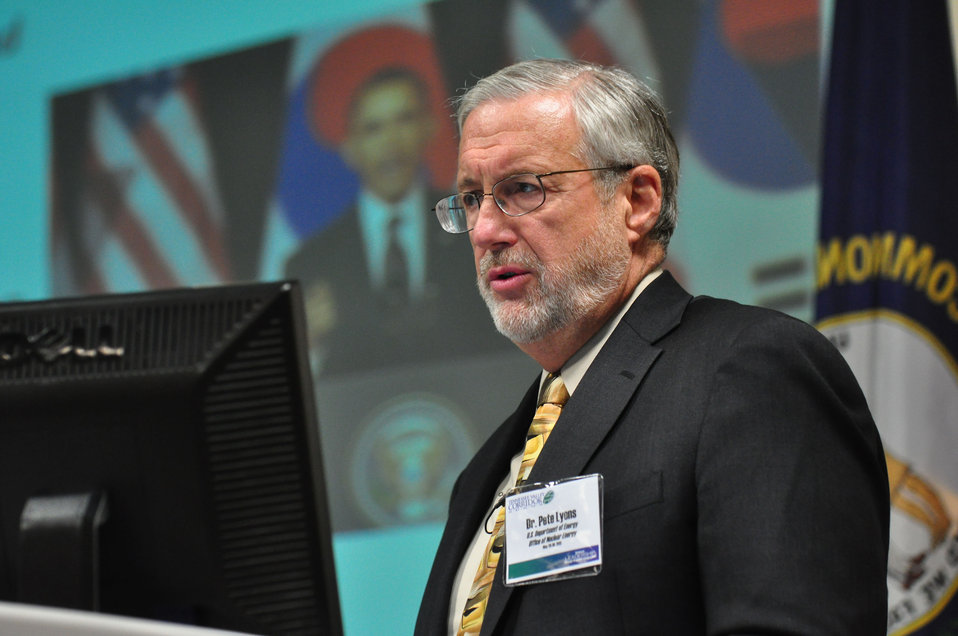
Tennessee Valley Corridor Summit Oak Ridge

13-062 DOE photo Lynn Freeny 5-29-2013 Oak Ridge Tennessee